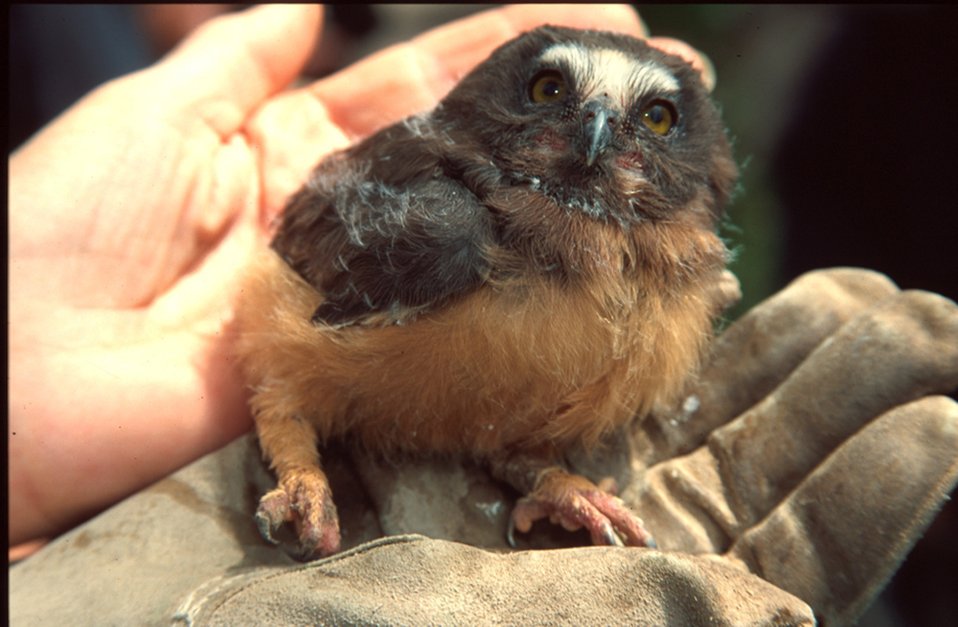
Owl Owyhee Field Office LSRD Lower Snake River District